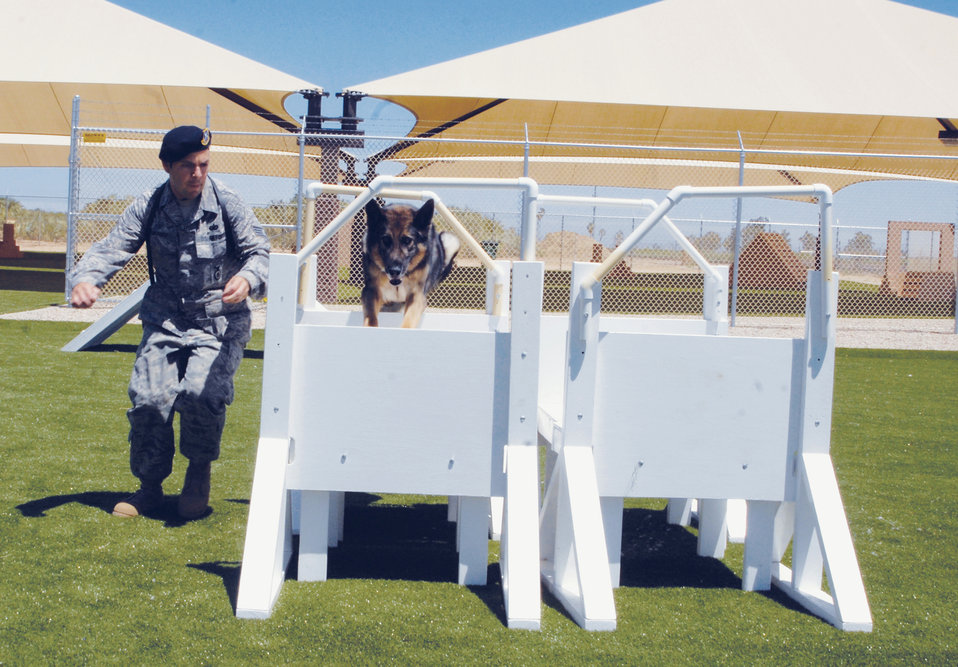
Luke AFB MWD

Staff Sgt. Gabriel Bravo has Rex jump through a simulated car window at the MWD kennel May 23, 2011, at Luke Air Force Base, Ariz.Sergeant Bravo is a 56th Security Forces SquadronMWD handler.